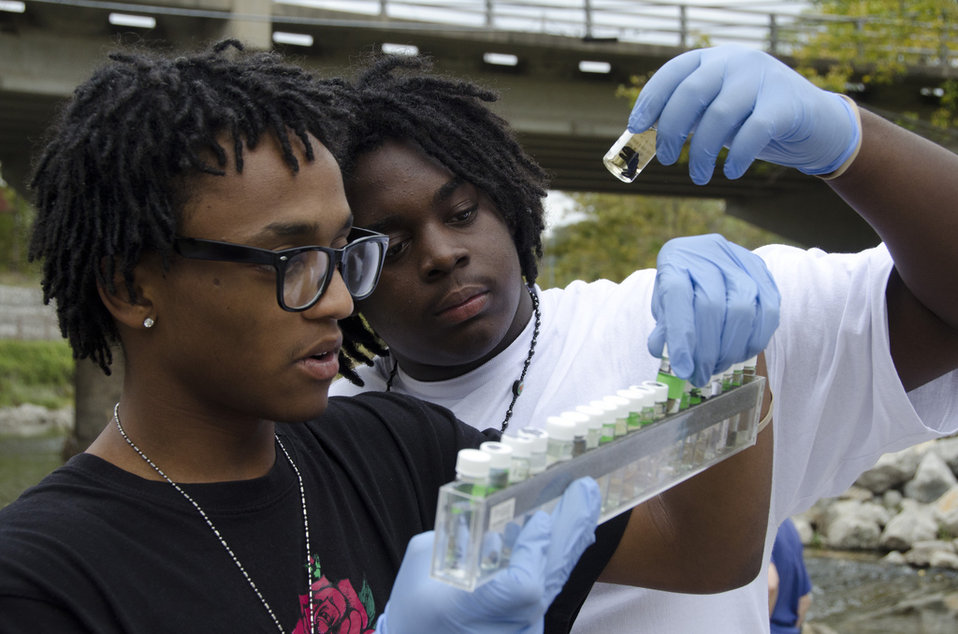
October 7, 2011 High school students help with water monitoring and river cleanup

35 Center High School Students, Blue River Watershed Association volunteers and EPA scientists monitored water quality and picked up trash at Indian Creek in Kansas City, Missouri.

October is Children's Health Month, a time when EPA works to bring even more awareness to environmental and health issues that can impact children.

Here, Region 7 staff were bringing these students to the rivers edge, connecting them to the importance of watersheds which, when protected, provide clean, safe water where Americans live, work and play.